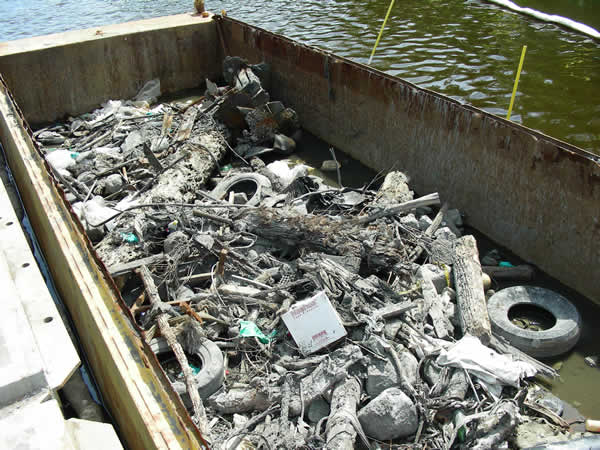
July 2009, Debris collected to ensure efficient dredge operations

Left at the bottom of the harbor, this debris could cause serious damage to dredge equipment and pipelines, in addition to lost time towards the cleanup.

All of the material collected is carefully and properly disposed of at a licensed facility.